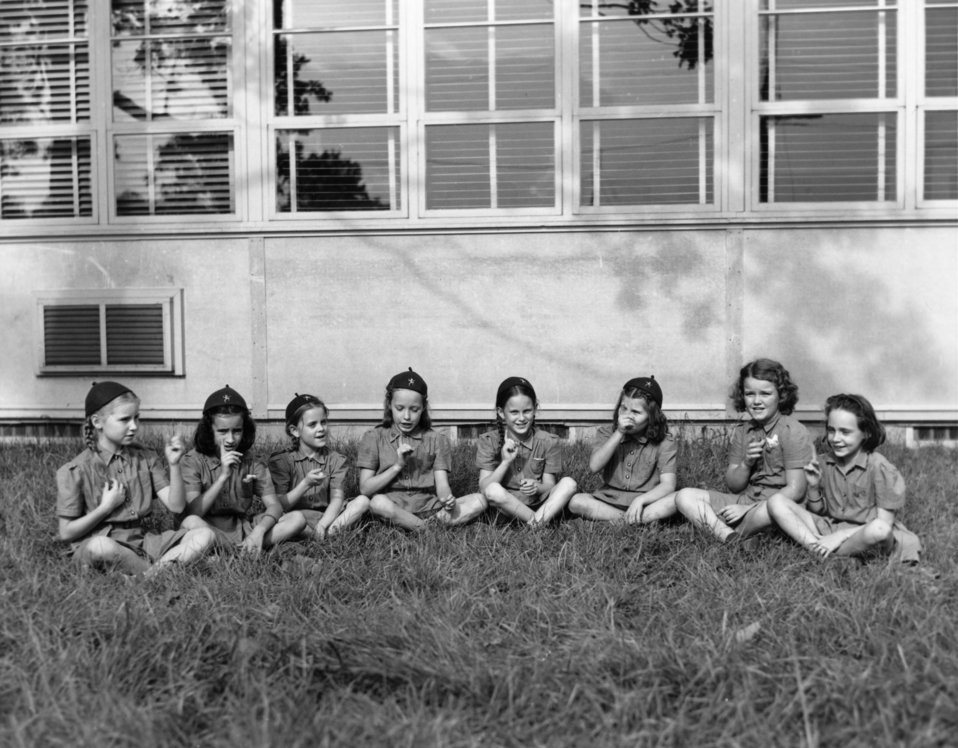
Daily Life at Oak Ridge